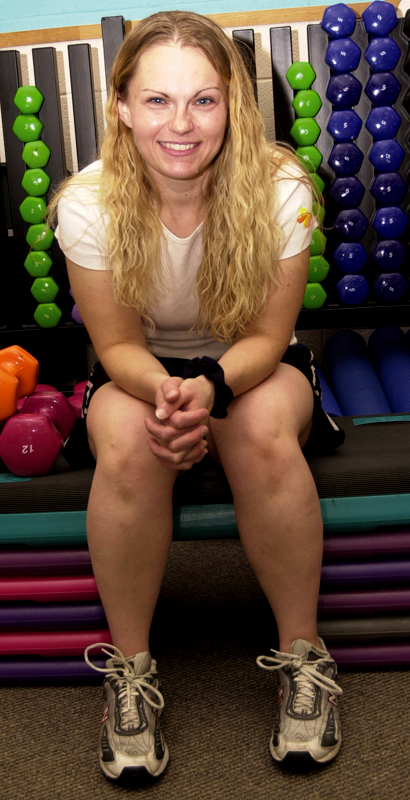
Fitness instructor loses nearly half of herself

Keyra Donaldson said exercise, healthy living and confidence in herself allowed her to lose 115 pounds in five years. Today she is a fitness instructor here. (SEYMOUR JOHNSON AIR FORCE BASE, N.C.)